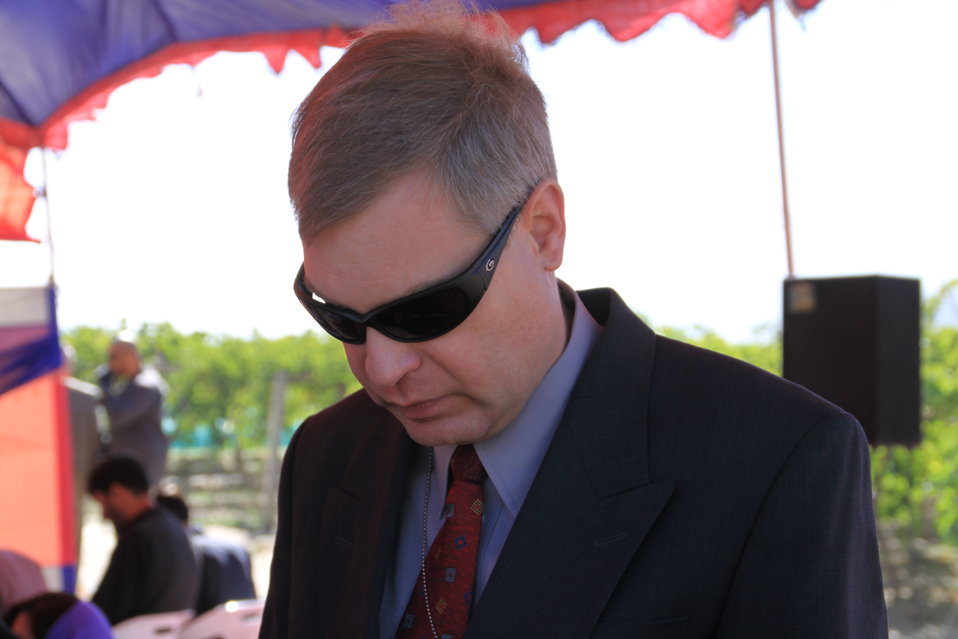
AVIPA Plus Wheat Seed Distribution 101005

US Ambassador Karl Eikenberry and USAID Acting Mission Director Kevin Brownawell joined the Minister of Agriculture, Irrigation and Livestock, H.E. Minister Mohammed Rahimi in signing a Memorandum of Understanding and distributing vouchers to area farmers for wheat and fertilizer.